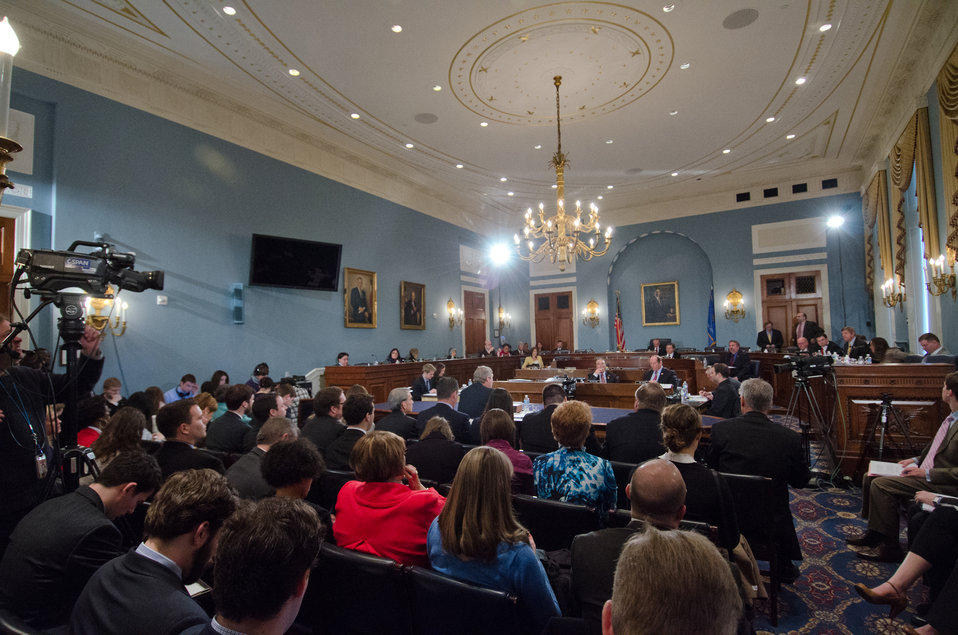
Agriculture Secretary Tom Vilsack testifies before the House Agriculture Committee regarding the “State of the Rural Economy“ at the Longworth House Office Building in Washington, D.C. on Tuesday, Mar. 5, 2013.